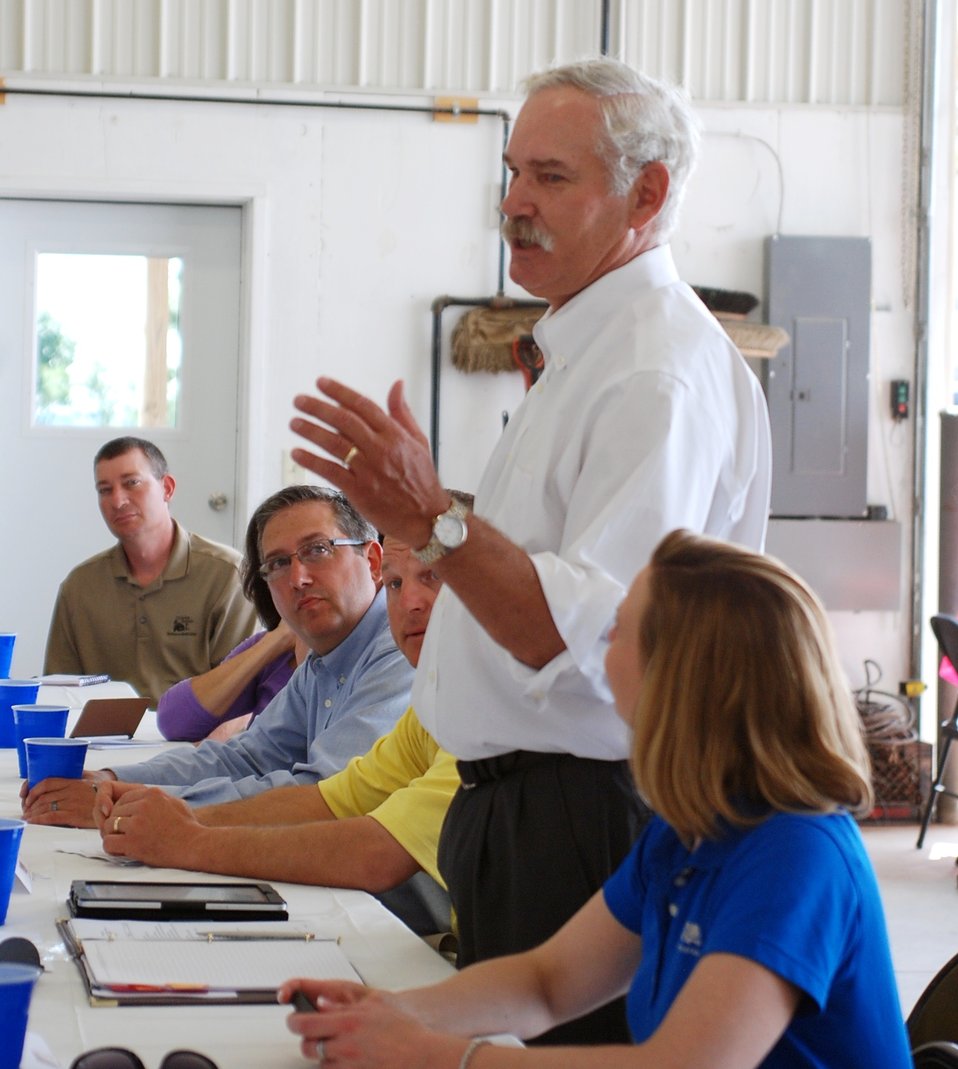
Agriculture Acting Deputy Secretary Michael Scuse hosts a roundtable discussion with Ohio FFA and 4-H in Licking County, OH on Thursday, May 30, 2013.